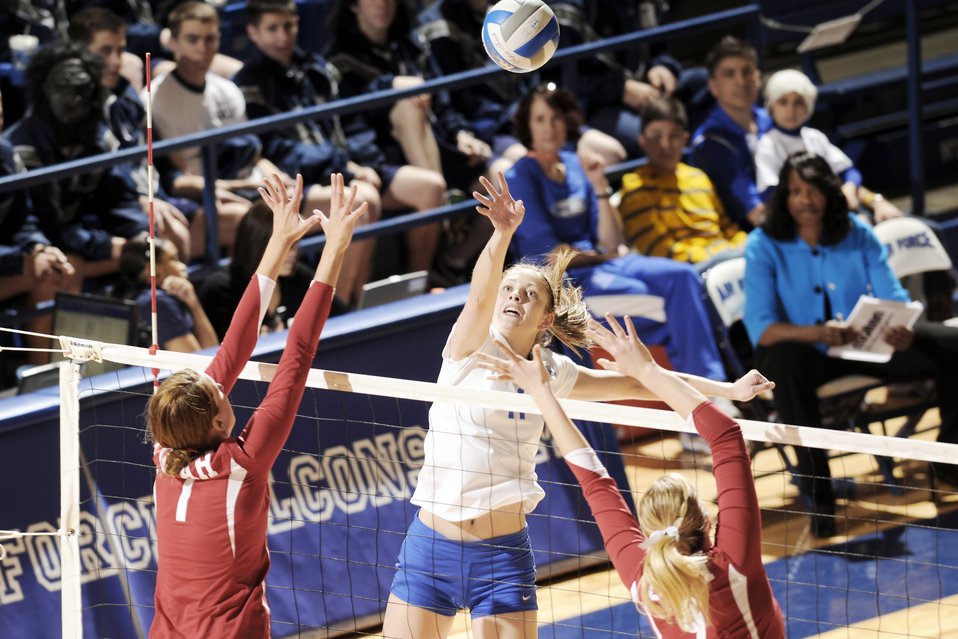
Academy women's volleyball team ends season

Falcon senior Michelle Harrington gets the jump on the ball against Utah Nov. 21, 2009, in Clune Arena at the U.S. Air Force Academy, Colo. The Falcons lost in a three-set decision 25-18, 25-16, and 27-25.